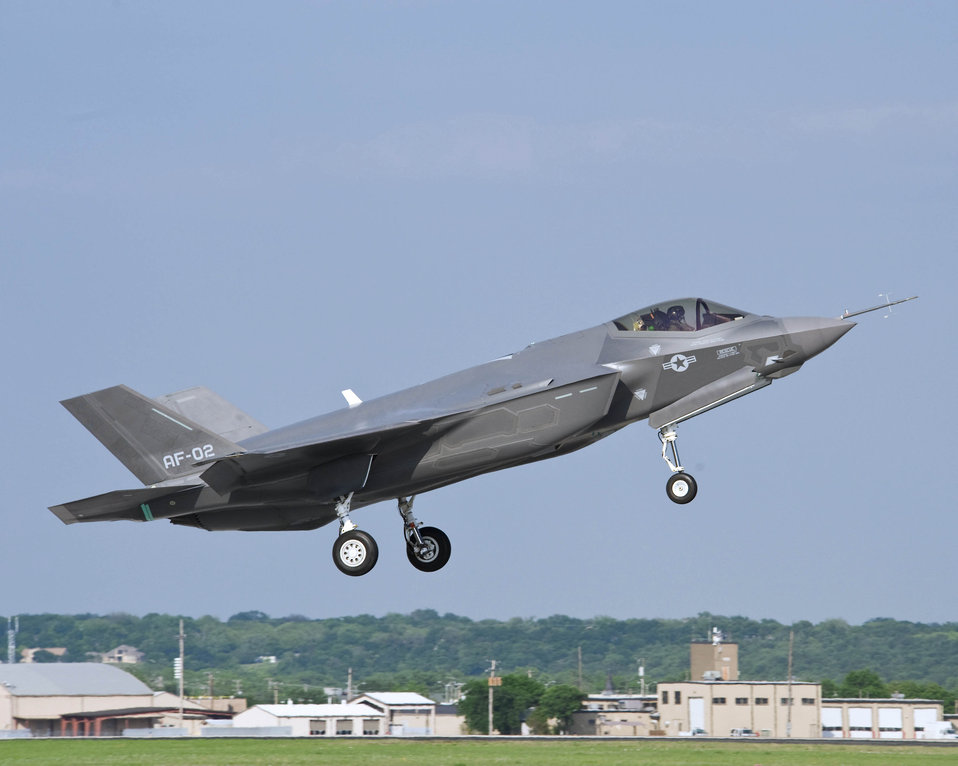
F-35 AF-2 first flight

This Air Force version of the F-35 Lightning II completed a test flight April 20, 2010, from Naval Air Station Fort Worth Joint Reserve Base, Texas. The F-35 is the first aircraft to be developed to meet the needs of three services -- the Air Force, Navy and Marine Corps -- and U.S. allies, with variants being developed simultaneously by prime contractor Lockheed Martin.